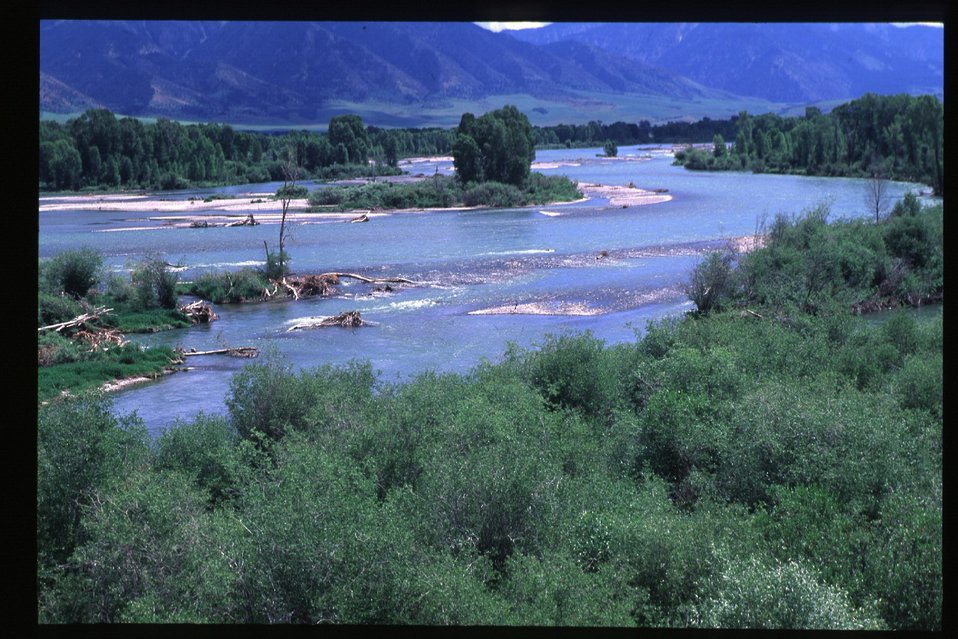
Scenic vista South Snake River Snake River Canyon USRD Upper Snake River District